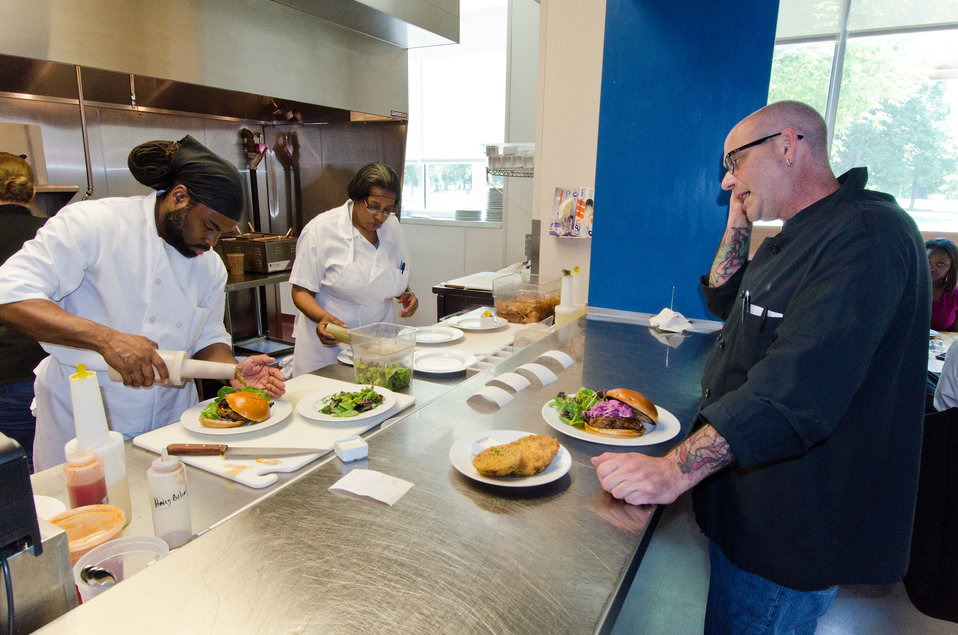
Chef David Rosenthal (right) reads lunch orders to Jack Jordon (left), Line Cook and Gilda Thomas (center), Line Cook at Inspiration Kitchens in Chicago, Illinois, on Friday June 8, 2012. Inspiration Kitchens, is a social enterprise restaurant of Inspiration Corporation Inspiration Kitchens and prepares contemporary American cuisine prepared and served by students and graduates in their food service training program. The kitchen also offers career services, employment preparation training, tuition subsidies, employer outreach, and job placement and retention services throughout the Chicago area.